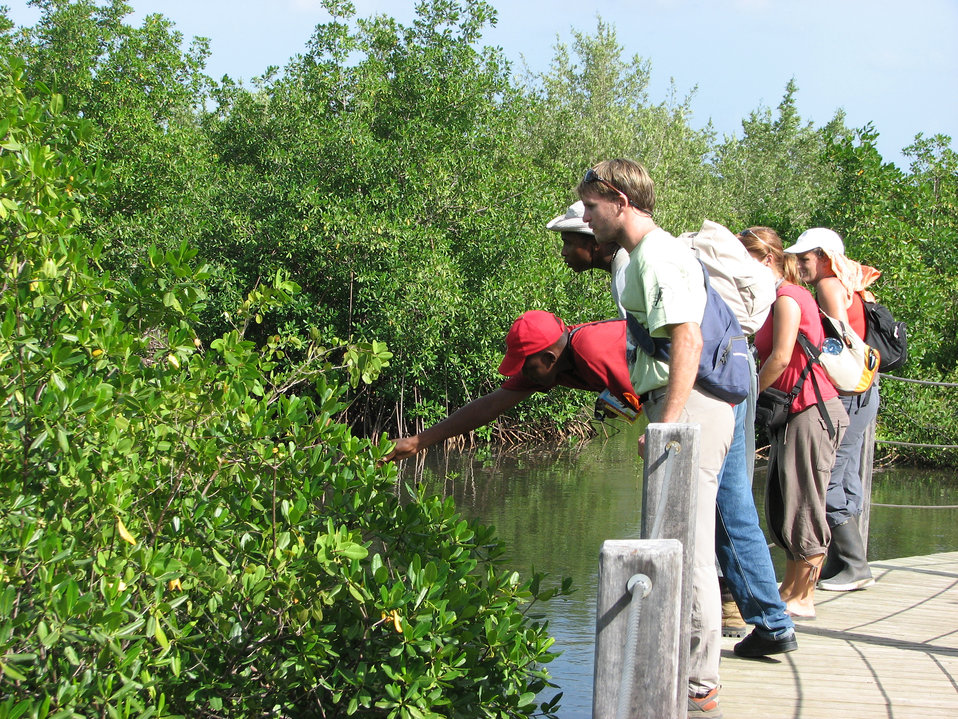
Learning about mangroves-2

Young conservationists study mangroves at SCSCB training.